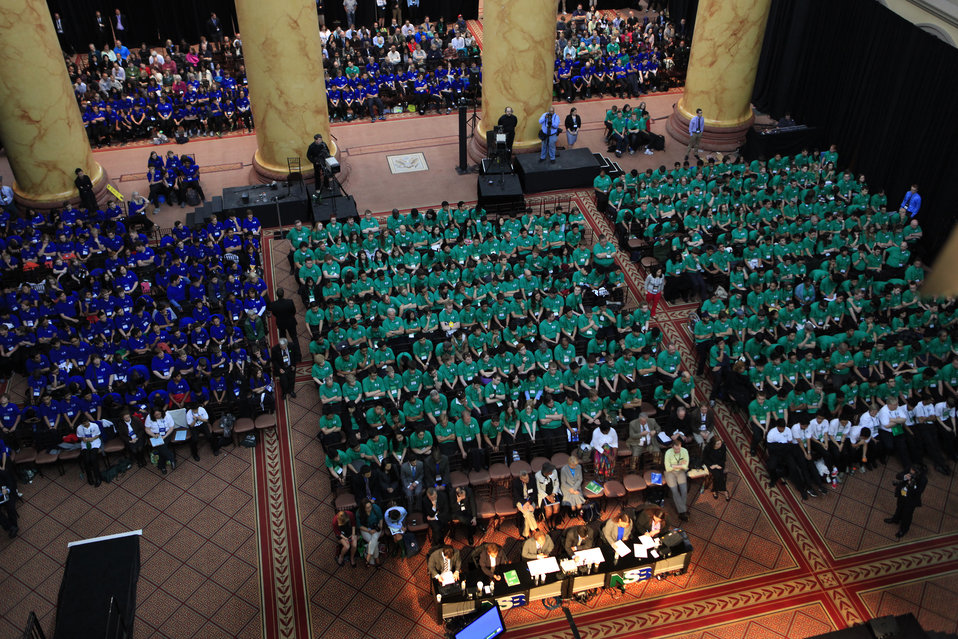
The final competition at the 2013 National Science Bowl in Washington, DC.

The Department of Energy created the National Science Bowl in 1991 to encourage students to excel in mathematics and science and to pursue careers in these fields.